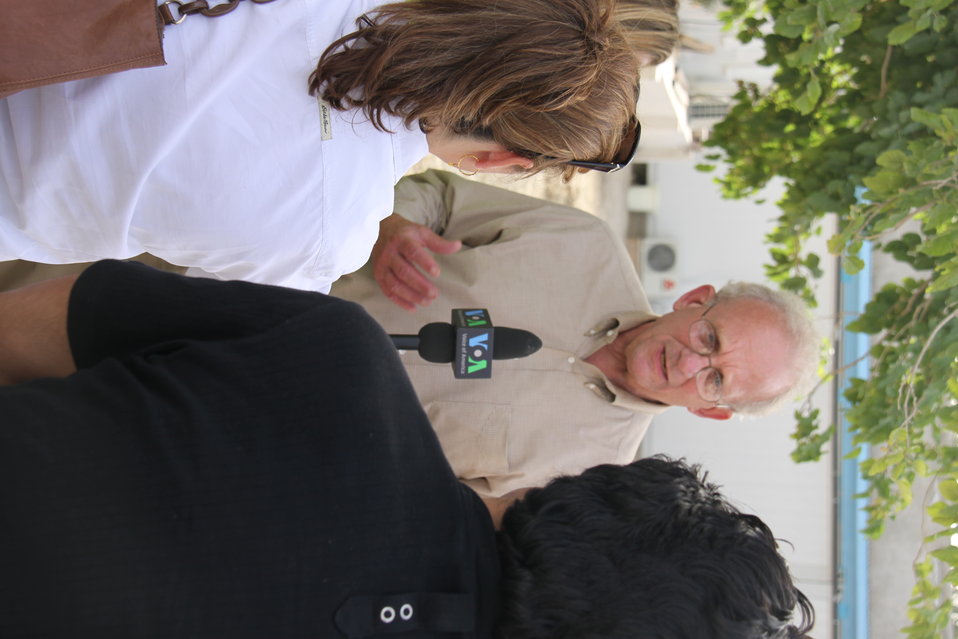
Meeting with Local Leaders in Kandahar